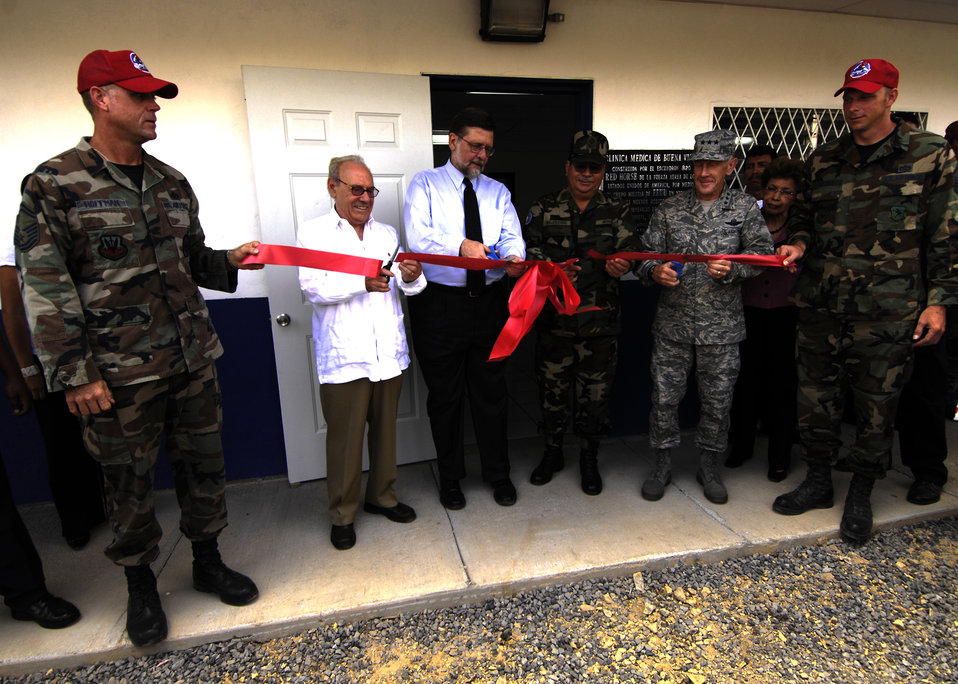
New Horizons Nicaragua 2007 closes out with ceremony

Nicaraguan Vice President Jaime Morales Carazo, U.S. Ambassador Paul Trivelli, Nicaraguan Army Gen. Moises Halleslevens and 12th Air Force Commander Lt. Gen. Norman Seip cut the ribbon for one of the New Horizons - Nicaragua 2007 projects, a five-room medical clinic in Buena Vista, April 27.